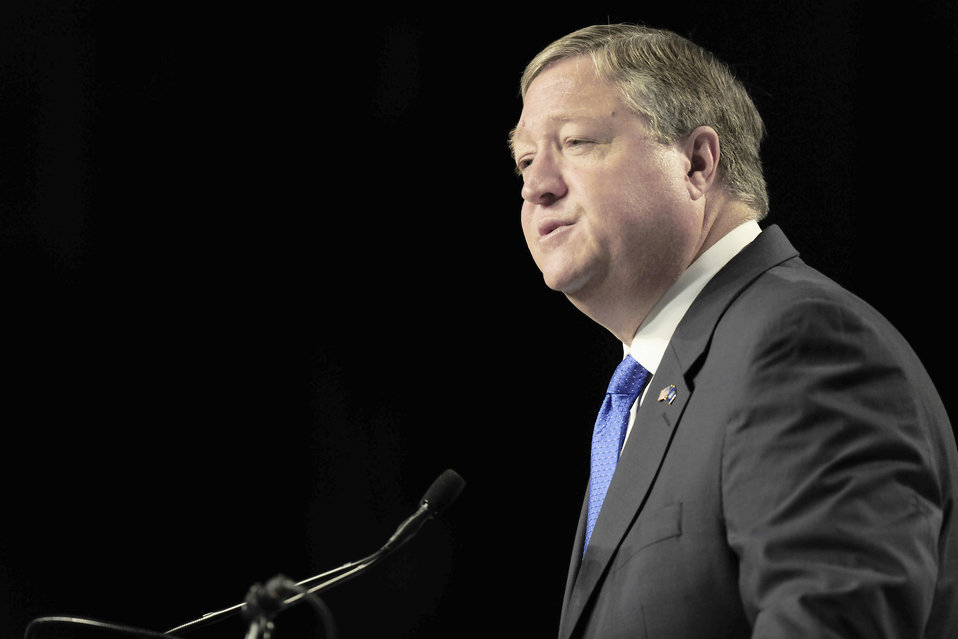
Secretary of the Air Force Michael Donley delivers his keynote speech during the opening morning of the Air Force Association's Air & Space Conference and Technology Exposition, Sept. 13, 2010, in National Harbor, Md. Secretary Donley discussed the world we live in today and how to ensure the Air Force remains well-postured for what tomorrow brings.